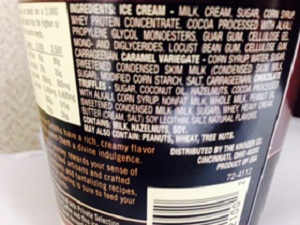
RECALLED – Chocolate Hazelnut Mascarpone Ice cream and Caramel Hazelnut Fudge Truffle Ice cream

April 26, 2014 – Product Recall – Two Private Selection Ice Cream Flavors Recalled for Undeclared Allergen.